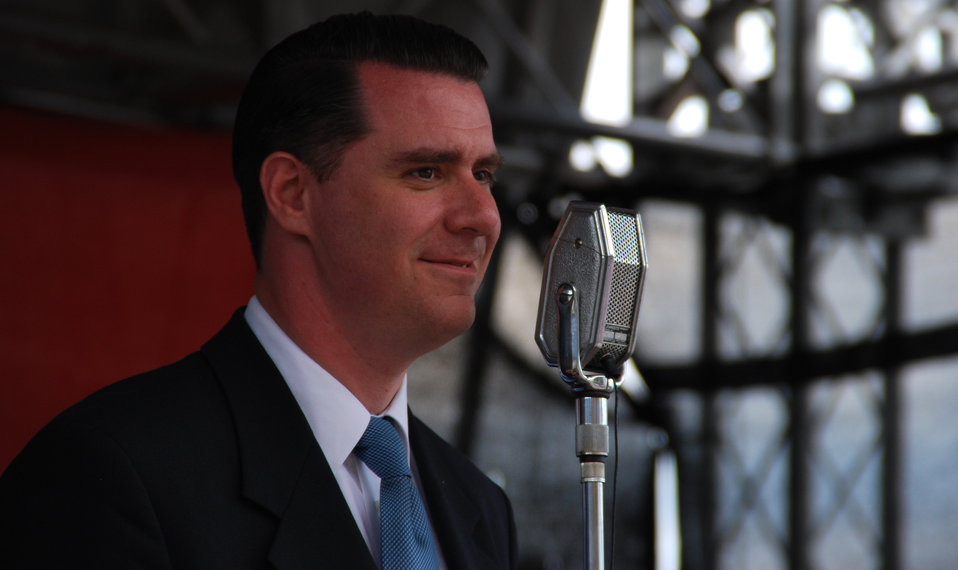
Andrej Hermlin, Deutscher Pianist und Bandleader